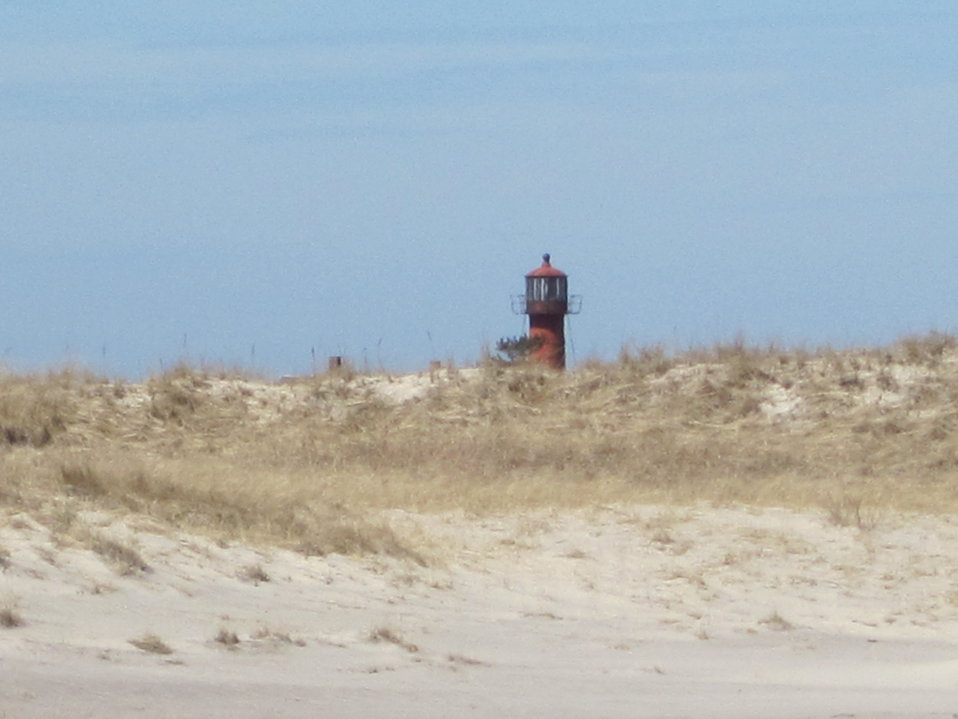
Lighthouse on South Monomoy Island

Lighthouse at a distance.

Credit: Keith Shannon/USFWS

Monomoy National Wildlife Refuge is part of the Eastern Massachusetts National Wildlife Refuge Complex.